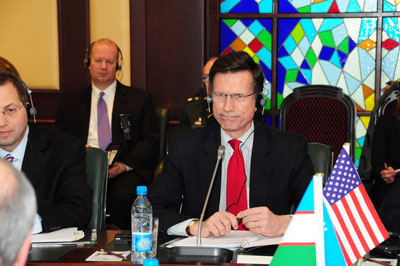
Assistant Secretary Blake Leads the U.S. Delegation

U.S. Assistant Secretary of State for South and Central Asian Affairs Robert O. Blake, center, leads the U.S. delegation in the second round of its Annual Bilateral Consultations with Uzbekistan in Tashkent, Uzbekistan, on February 18, 2011.